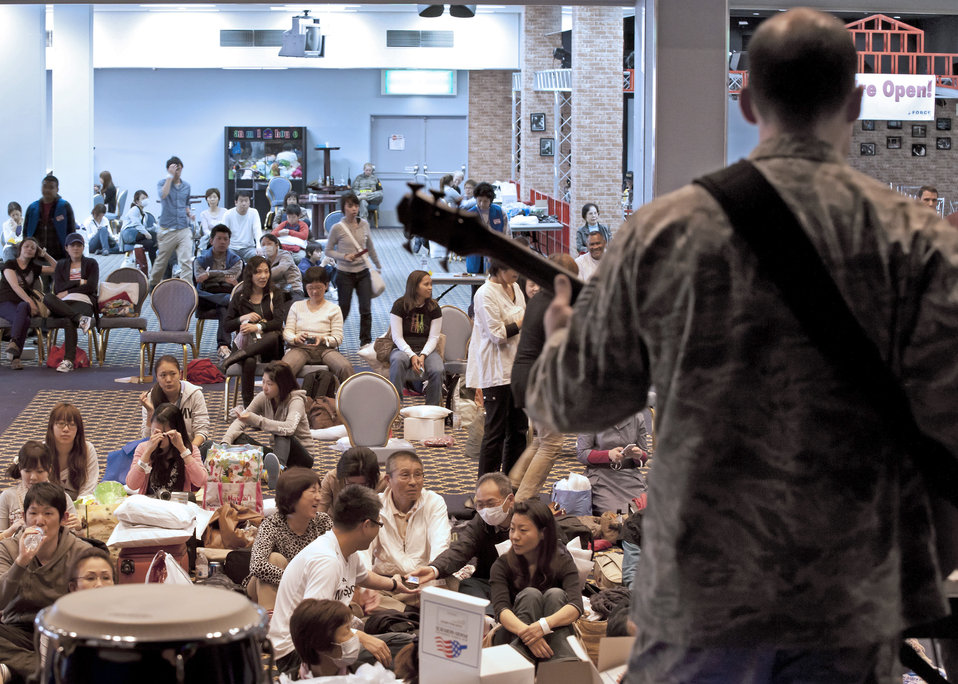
community center at Yokota Air Base, Japan,

Staff Sgt. Anthony Schmaus, U.S. Air Force Band of the Pacific, performs on stage for passengers diverted from Narita International Airport inside the community center at Yokota Air Base, Japan, March 11, 2011. The jazz combo entertained passengers who stayed overnight as a result of the earthquake in Tokyo.